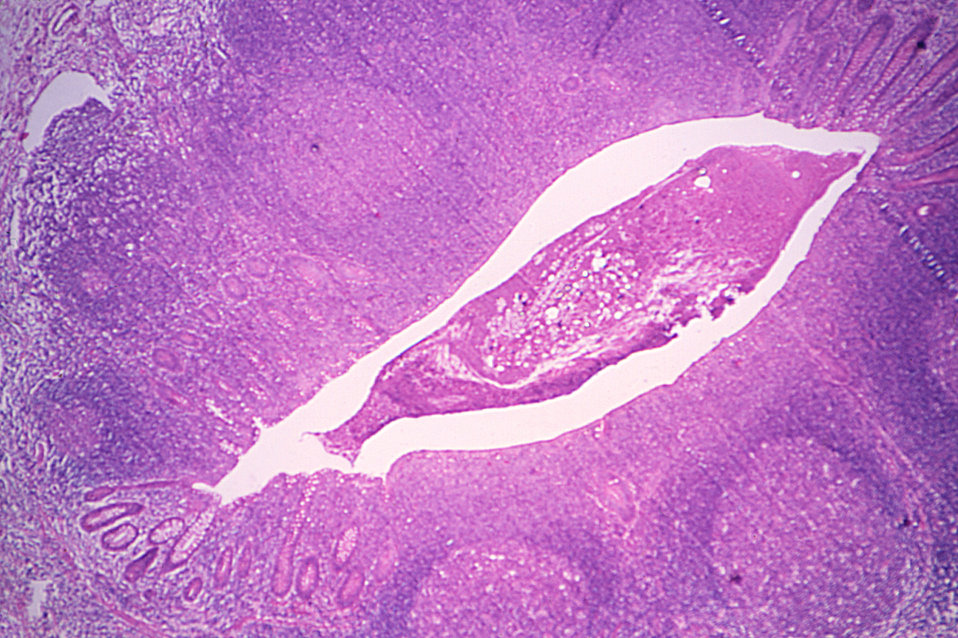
Histopathology of Taenia saginata in appendix. Parasite.